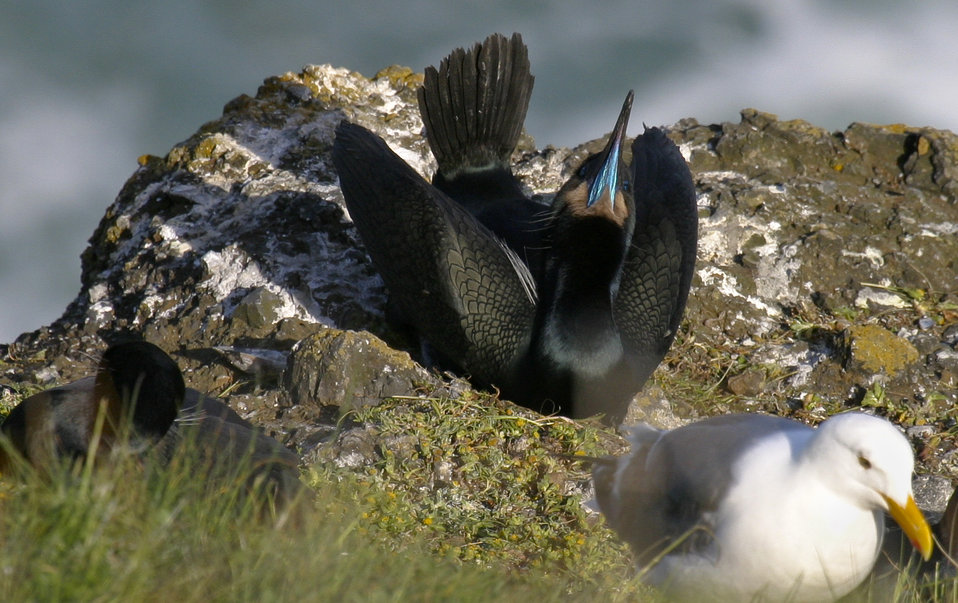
Brandt's Cormorant

A displaying male Brandt's Cormorant. The gular pouch becomes bright blue during the breeding season. Brandt's Cormorants nest within Cape Meares, Three Arch Rocks, and Oregon Islands National Wildlife Refuges.